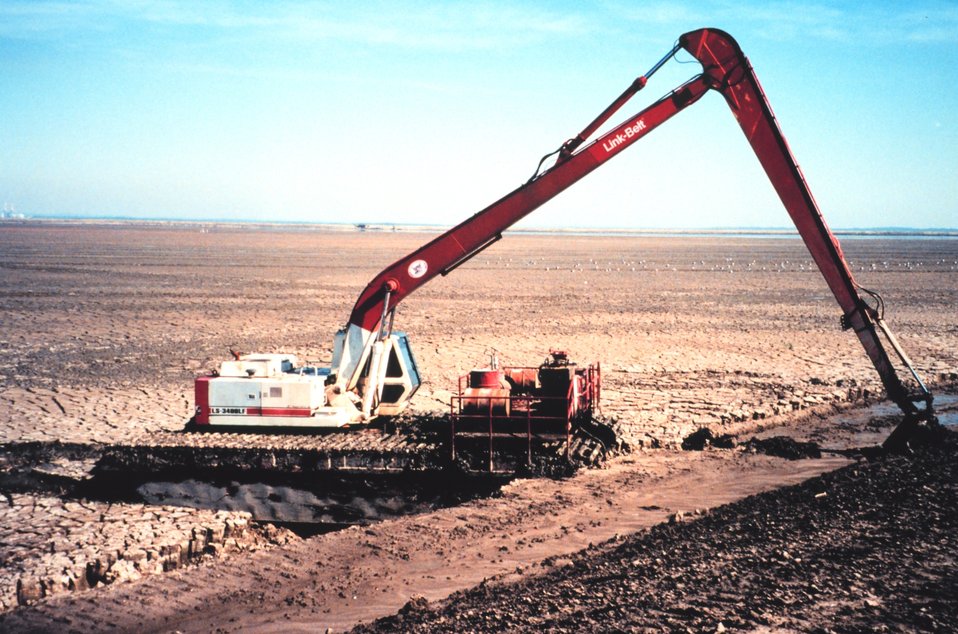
Hart-Miller Island, once two islands that nearly eroded into extinction, are now one. They are being regenerated and enlarged with dredge spoils from Baltimore Harbor.